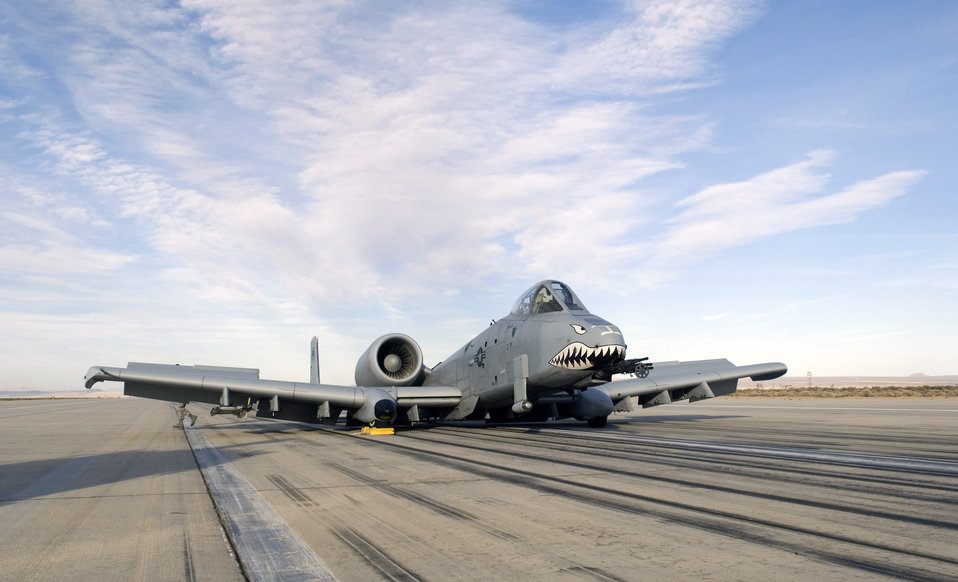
A-10 makes wheels-up landing at Edwards

An A-10 sits on the runway after making an emergency landing March 25 at Edwards Air Force Base, Calif. The A-10 touched down with its landing gear in the up position after declaring an in-flight emergency. The pilot was not harmed. The aircraft, assigned to the 75th Fighter Squadron at Moody AFB, Ga., was participating in a Green Flag sortie out of Nellis AFB, Nev.